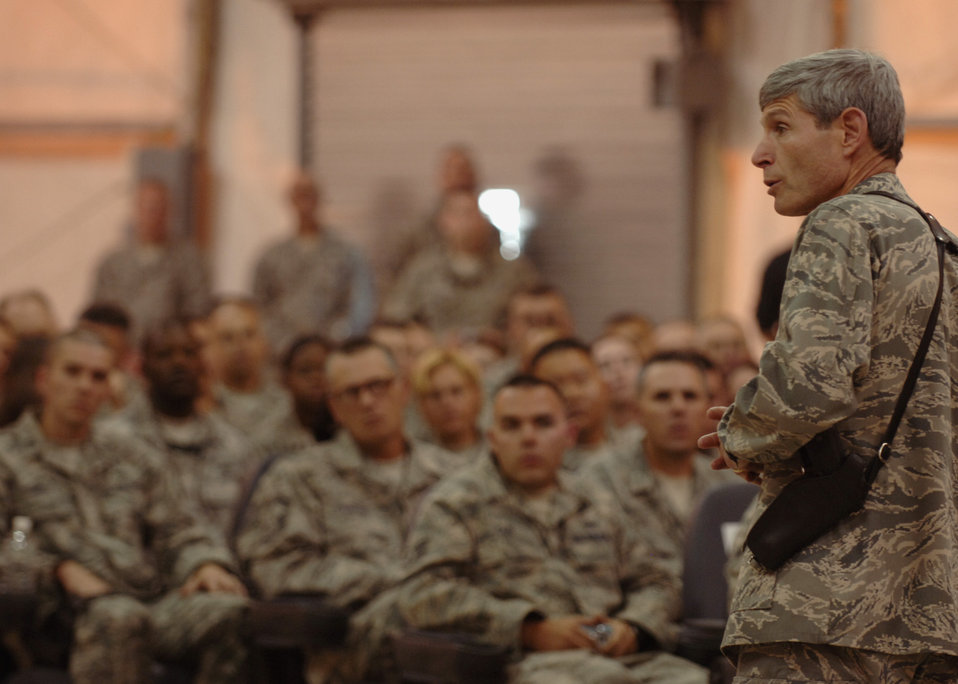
Chief of Staff tours Iraq

Air Force Chief of Staff Gen. Norton Schwartz speaks to Airmen from the 447th Air Expeditionary Group at Sather Air Base, Iraq, Oct. 24. General Schwartz spoke to Airmen about career field reorganization, deployment training and the on-going operations in Iraq. This is the CSAF's first trip to Iraq since assuming his current position as the Air Force chief of staff.